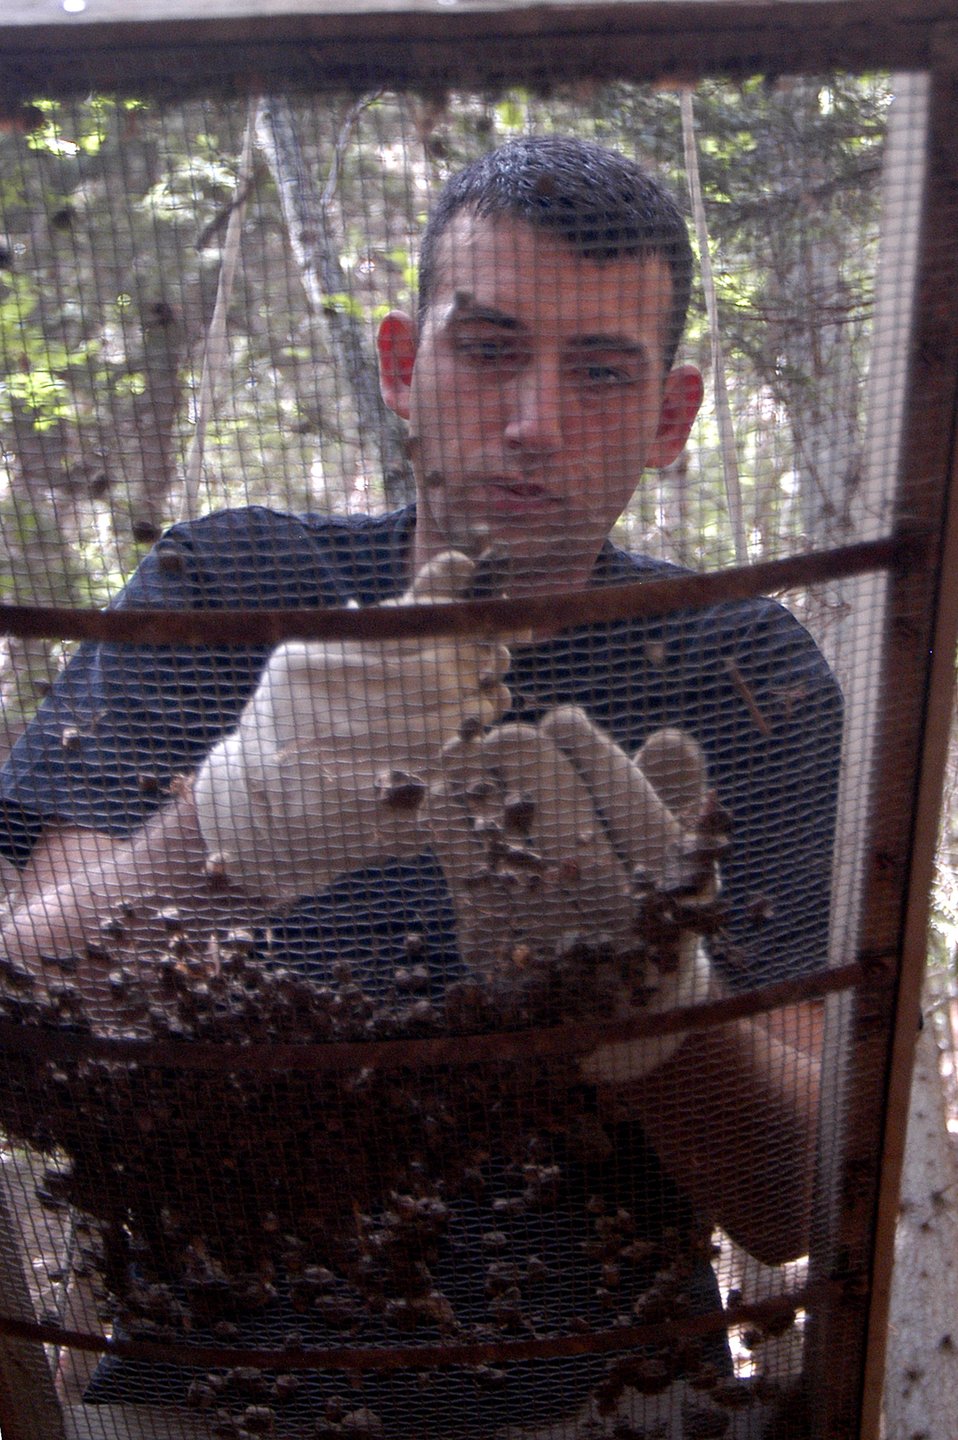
JPAC team returns from Austria

Army Sgt. Robert Danford screens through soil in an attempt to find any human remains, aircraft wreckage or personal effects at his work site near Vostenhof, Austria, Sept. 4. Sergeant Danford is a recovery NCO from the Joint POW/MIA Accounting Command at Hickam Air Force Base, Hawaii. An 18-member JPAC team, including a forensic anthropologist, explosive ordnance disposal technician and field medic, returned Oct. 1 after 45 days in Austria attempting to recover the remains of 1st Lt. Stanley Dwyer and gunner Sgt. John Boros who were lost in the crash May 10, 1944. The mission of JPAC is to achieve the fullest possible accounting of all Americans missing as a result of the nation's past conflicts.